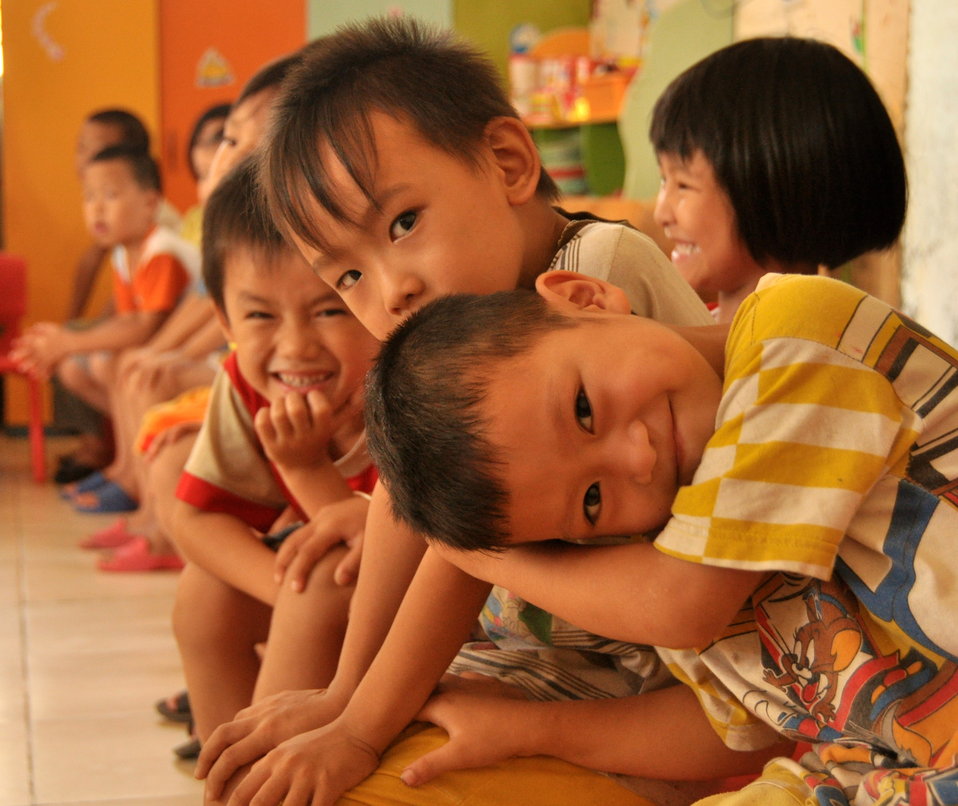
USAID Delivers Deworming Medication to Kindergartners in Nam Dinh Province

Children of Vietnam's Nam Dinh Province receive deworming medicine in a program supported by USAID and World Vision Australia.
June 1, 2013